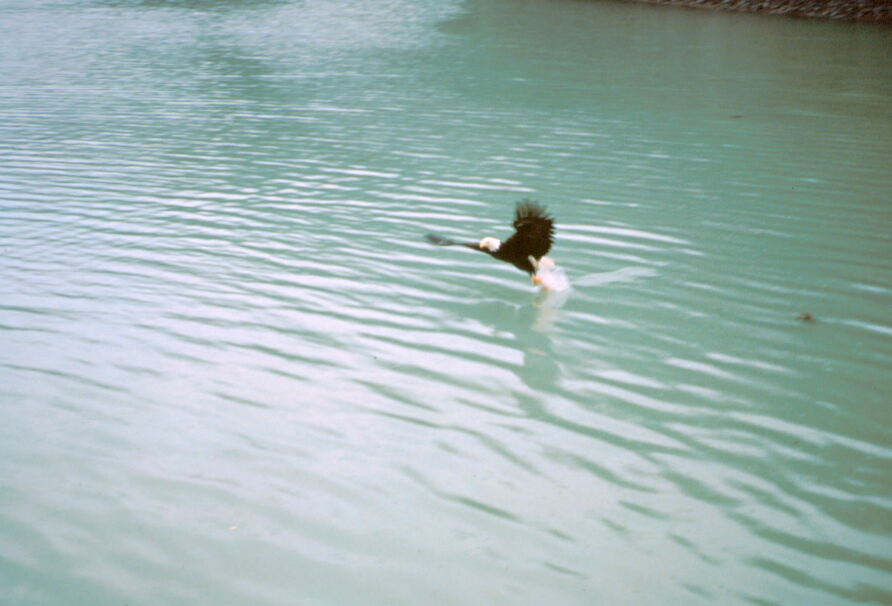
Bald Eagle.